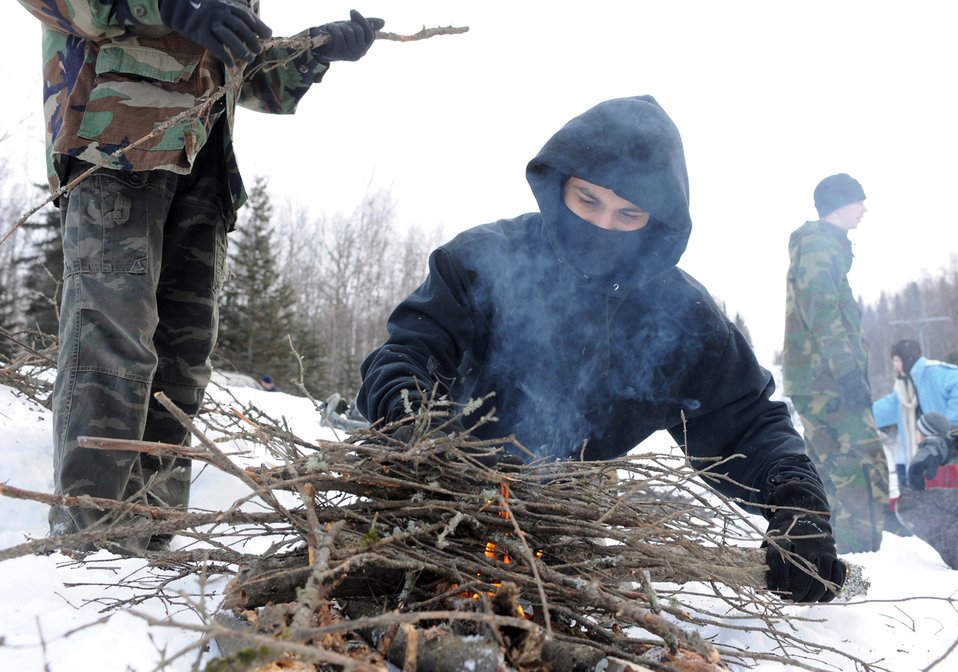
Cadets recieve cold-weather training in Alaska

Cadet Master Sgt. Henryk Maldonado works to get a flame going following a fire-bilding class taught Feb. 29 by Staff Sgt. Marc Richard, a survival, evasion, resistance and escape specialist with Det. 1 of the 353rd Combat Training Squadron at Elmendorf Air Force Base, Alaska. The SERE specialist briefed the cadets on how to build a fire from natural elements in the surround environment. Cadet Maldonado is from the Eagle River High School.